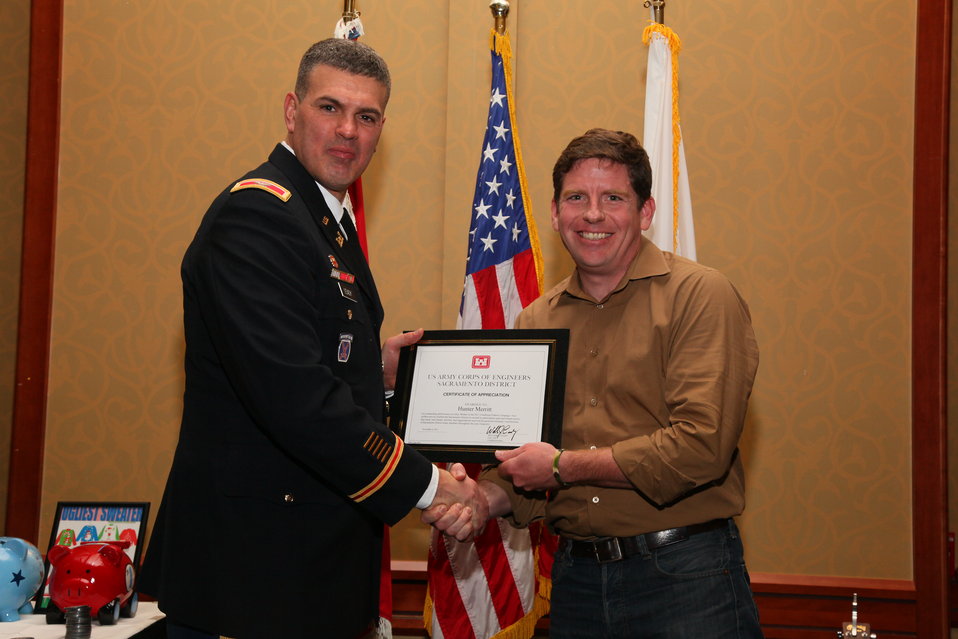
Sacramento District Holiday Party 2011